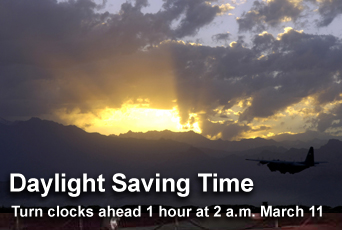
Daylight Saving Time

Turn your clocks ahead one hour at 2 a.m. March 11 for the start of daylight savings time, or DST. The annual time change has been moved up from the first Sunday in April to the second Sunday in March.